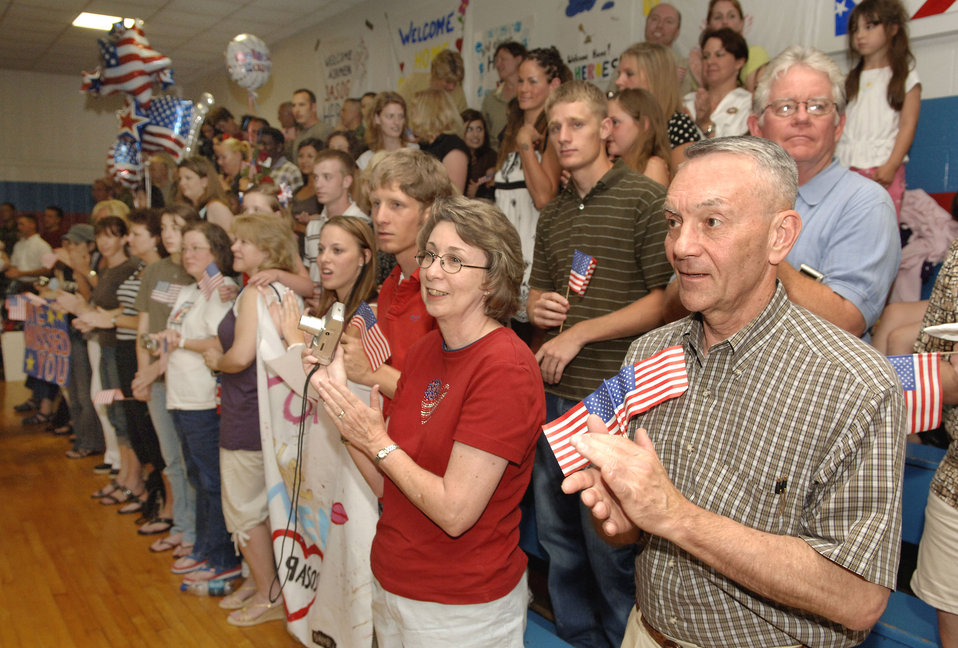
Airmen deployed with Army return home

Parents and family members applaud as their sons, daughters, spouses and parents enter a gym following the return of battlefield Airmen from the 3rd Air Support Operations Group June 5 at West Fort Hood, Texas. The Airmen spent the past six months supporting Army combat brigades with close-air and overwatch support.